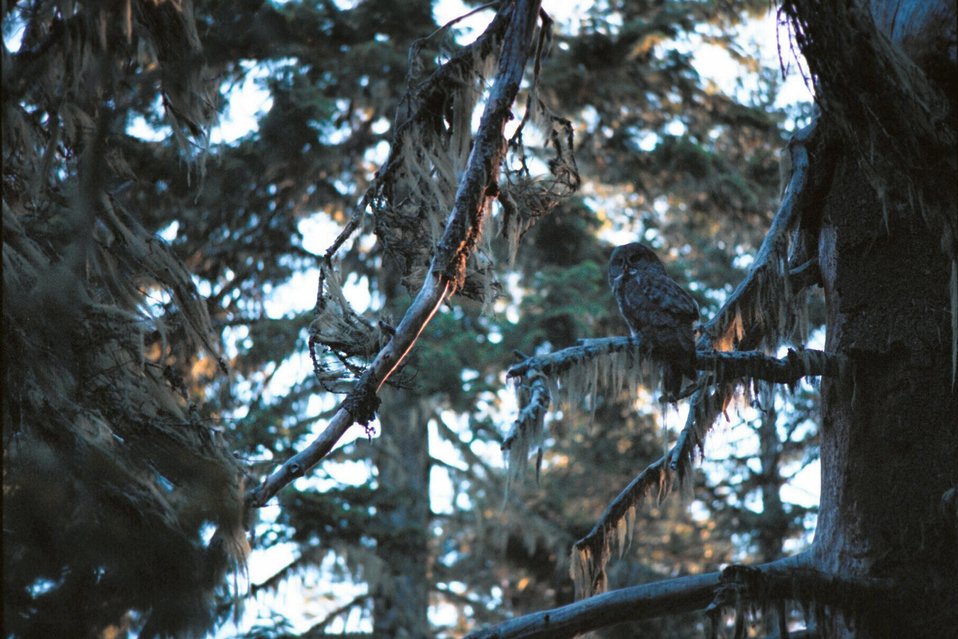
Great Gray Owl (Strix nebulosa) near her nest.